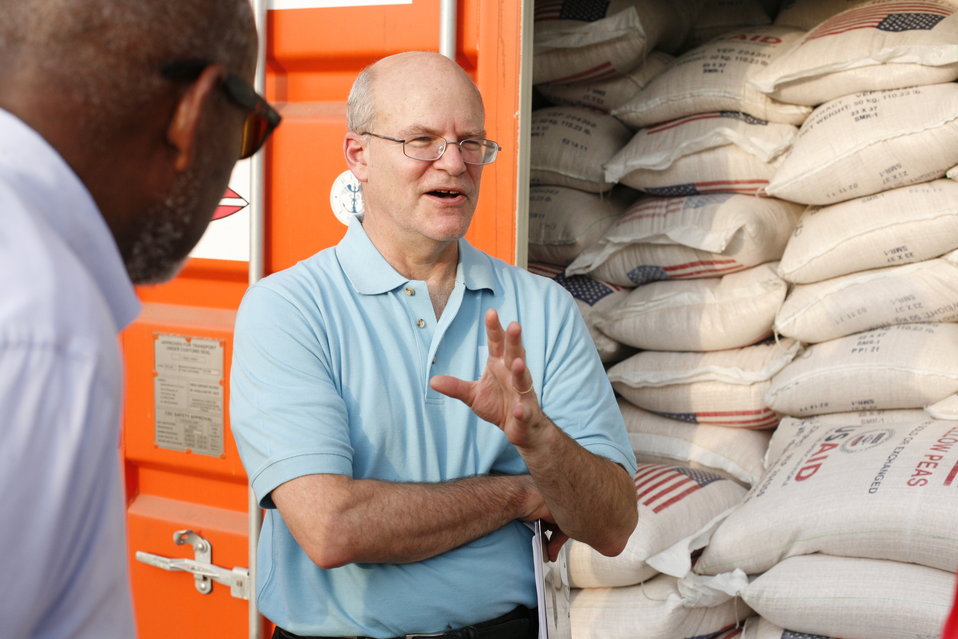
USAID Deputy Administrator Steinberg and Assistant Secretary Carson Review U.S. Food Aid in Djibouti

U.S. Agency for International Development (USAID) Deputy Administrator Donald K. Steinberg, center, and Assistant Secretary of State for African Affairs Johnnie Carson, left, review U.S. food aid in Djibouti, Republic of Djibouti, on July 8, 2011.